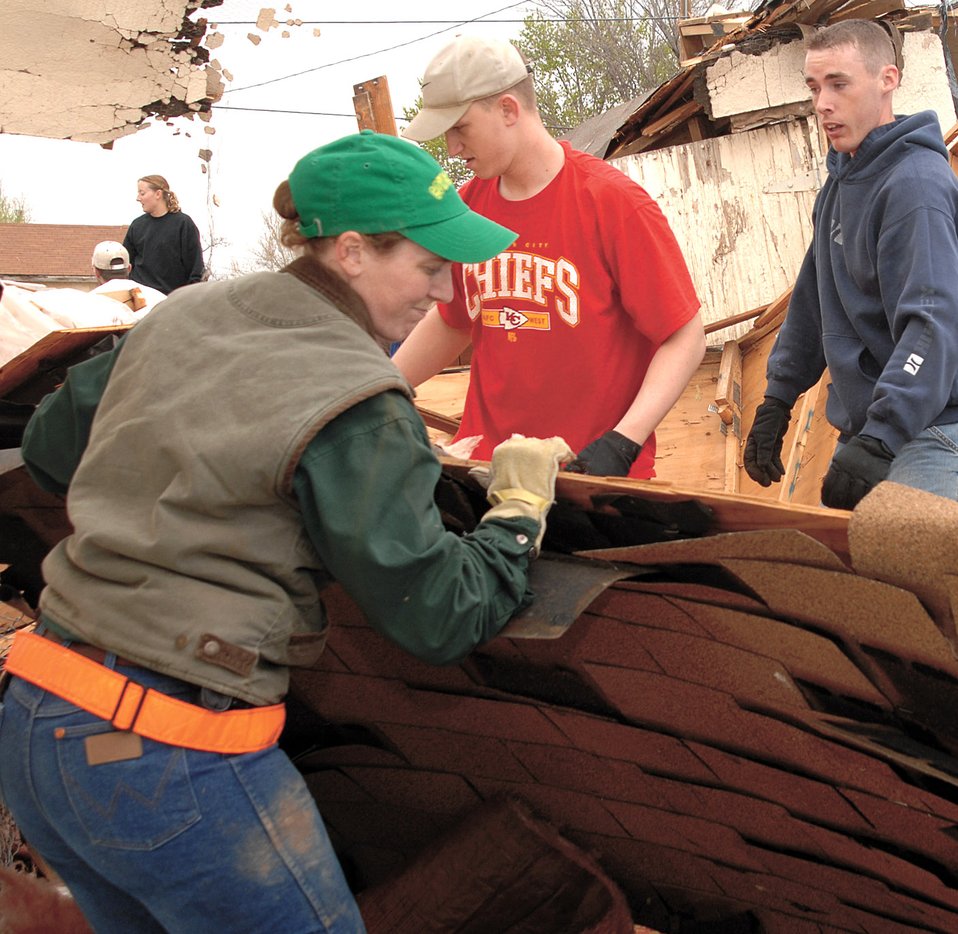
Helping hand

Senior Airman Sarah Lunt moves a section of roofing into a trash pile while cleaning up tornado damage March 25 in Clovis, N.M. More than 500 volunteers from nearby Cannon Air Force Base began restoring Clovis after tornadoes ripped through the town March 23.